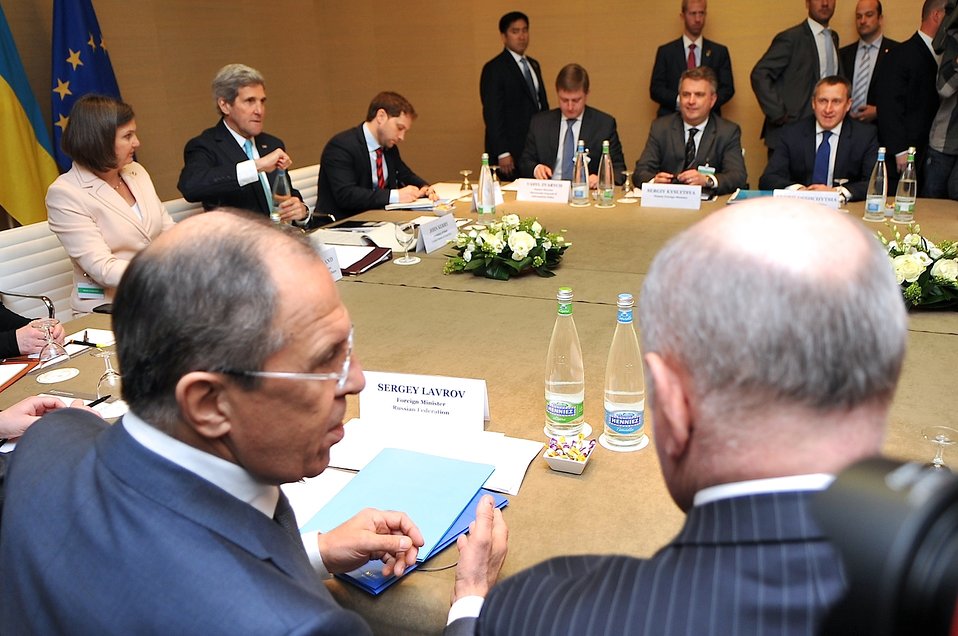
U.S., Russian, Ukrainian Foreign Ministers Prepare For Quadrilateral Meeting in Geneva

U.S. Secretary of State, Russian Foreign Minister Sergey Lavrov, and Ukrainian Foreign Minister Andrii Deshchytsia sit across from one another in Geneva, Switzerland, on April 17, 2014, before a quadrilateral meeting focused on Ukraine that also included European Union High Representative Catherine Ashton.